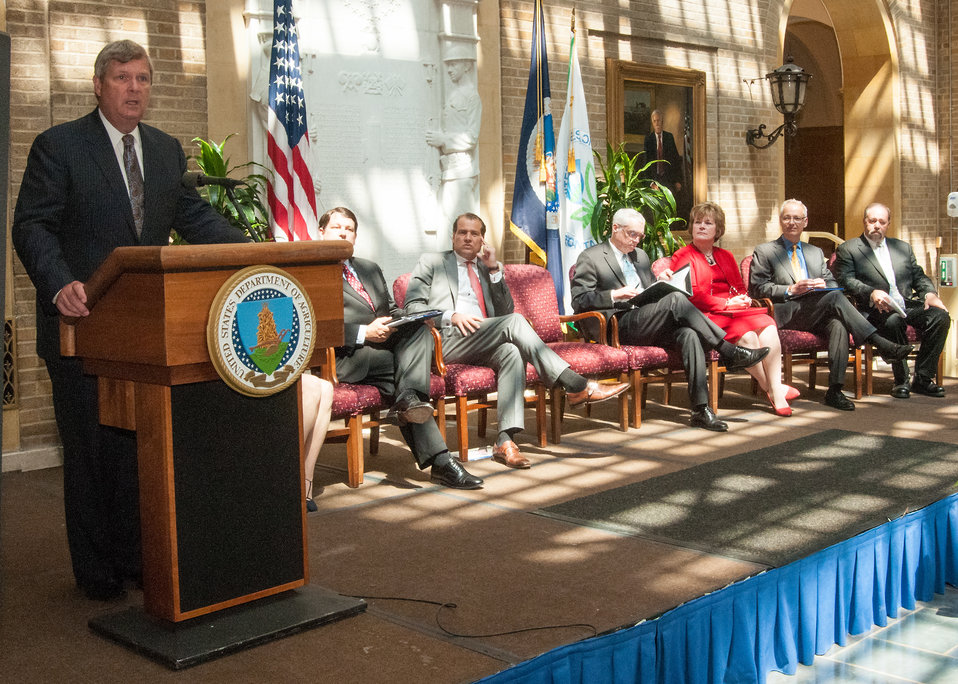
Agriculture Secretary Tom Vilsack speaks at the launching of the U.S. Food Waste Challenge held at the U.S. Department of Agriculture (USDA) in Washington, D.C. on Tuesday, Jun. 4, 2013. The U.S. Food Waste Challenge is a nationwide effort by USDA and the Environmental Protection Agency (EPA) to reduce, recover and recycle U.S. food waste. Representatives from Gills Onions/Rio Farms, Unilever, Food Marketing Institute, National Restaurant Association, Grocery Manufacturers Association, Food Waste Reduction Alliance, Feeding America and Rock and Wrap It Up! were also present.